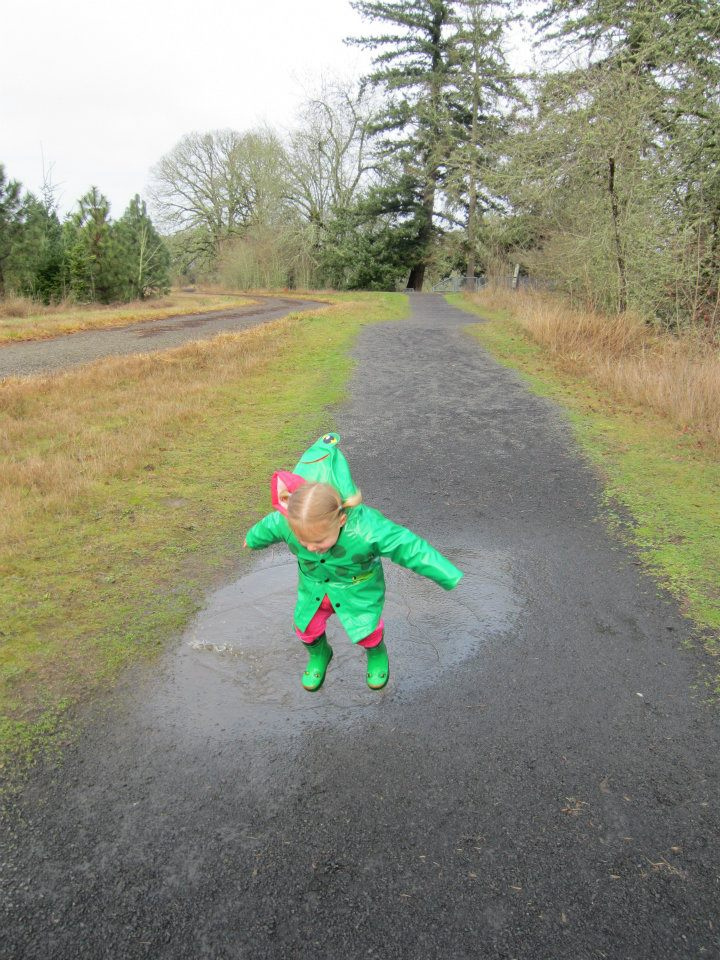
young puddle stomper

A young girl gets into the spirit of a Puddle Stompers play day.
Tualatin National Wildlife Refuge, OR